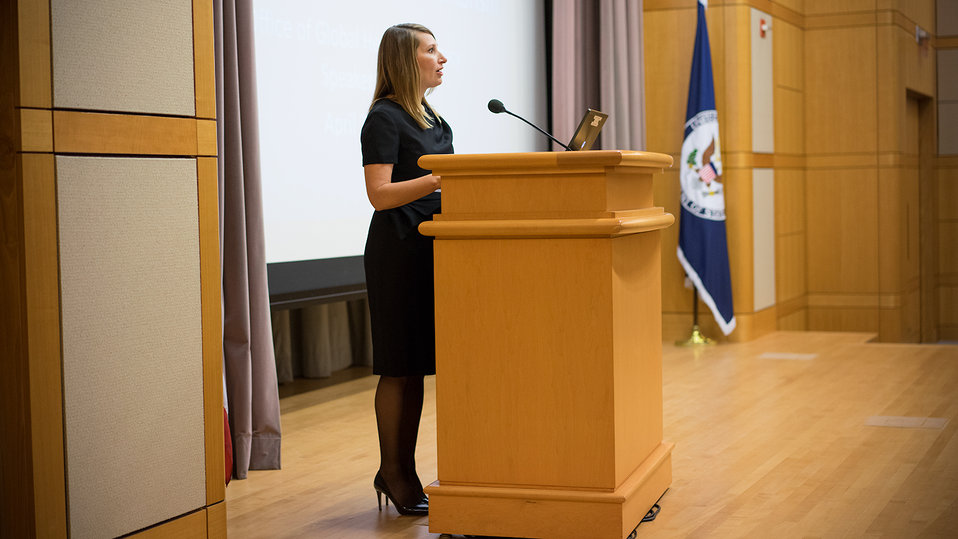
Deputy Secretary Higginbottom Introduces Dr. Vanessa Kerry

Deputy Secretary of State for Management and Resources Heather Higginbottom introduces Dr. Vanessa Kerry, Co-Founder and Chief Executive Officer of Seed Global Health, to deliver remarks on 'Improving Developing Country Health Systems through the Spirit of Volunteerism,' part of the Secretary’s Office of Global Health Diplomacy (S/GHD) Speaker Series, at the U.S. Department of State in Washington, D.C., on April 22, 2014.